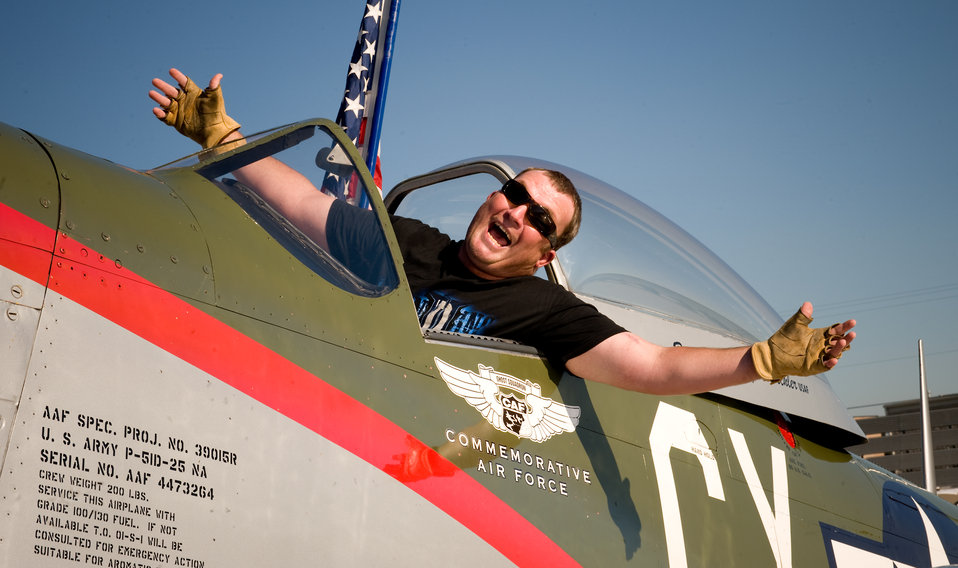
Warrior Flight